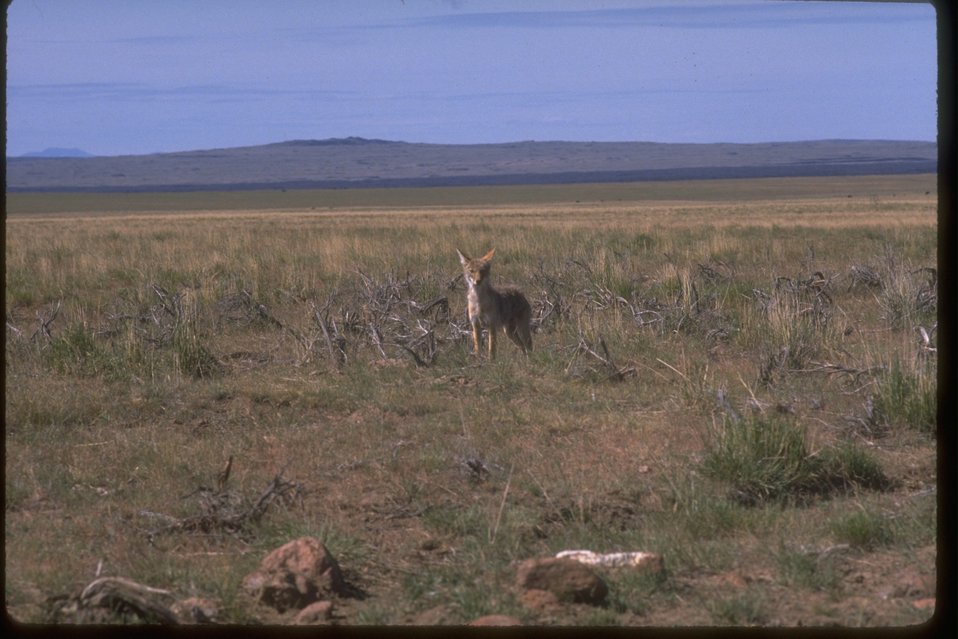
Jordan Craters Coyote.